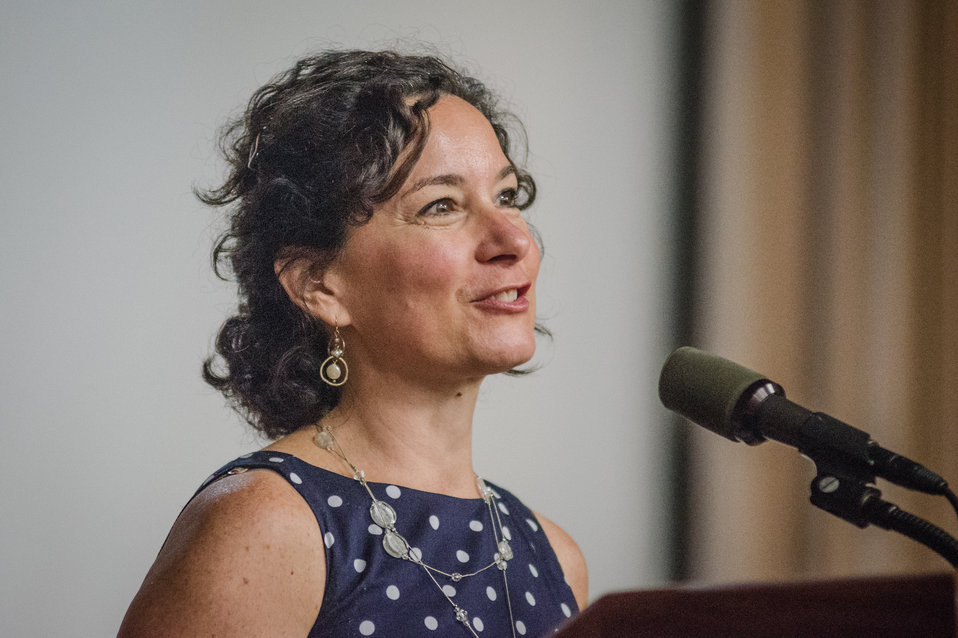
U.S. Department of Agriculture (USDA) Rural Development (RD) Deputy Under Secretary Patrice Kunech speaks at the USDA’s RD 2nd Annual Cultural Transformation kickoff opening ceremony and forums, themed “Employees Influencing Change,” on Tuesday, Aug. 13, 2013 USDA in Washington, D.C.